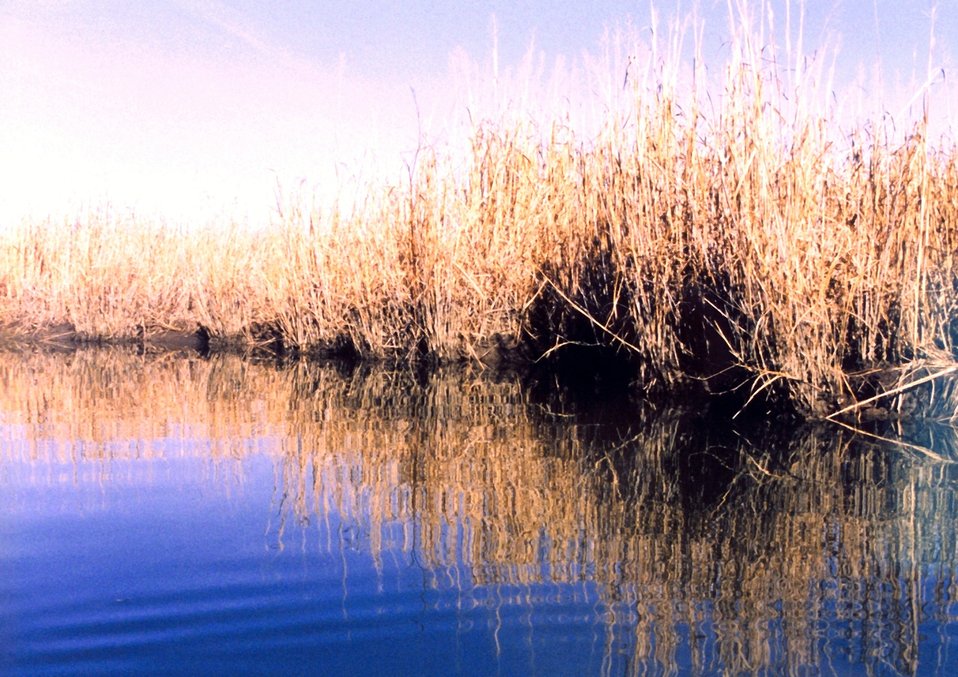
Reflections of a Patuxent River marsh.